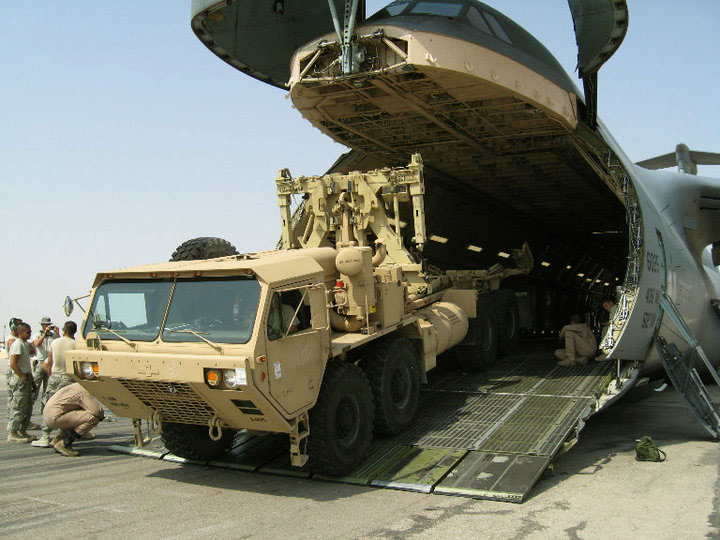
C-5s support Afghanistan troop surge

Reserve and active-duty C-5 aircrews from Dover Air Force Base, Del., spent June 15, 2010 through July 15, 2010 overseas supporting the Afghanistan troop surge by delivering 4 million pounds of cargo to various locations in Afghanistan.